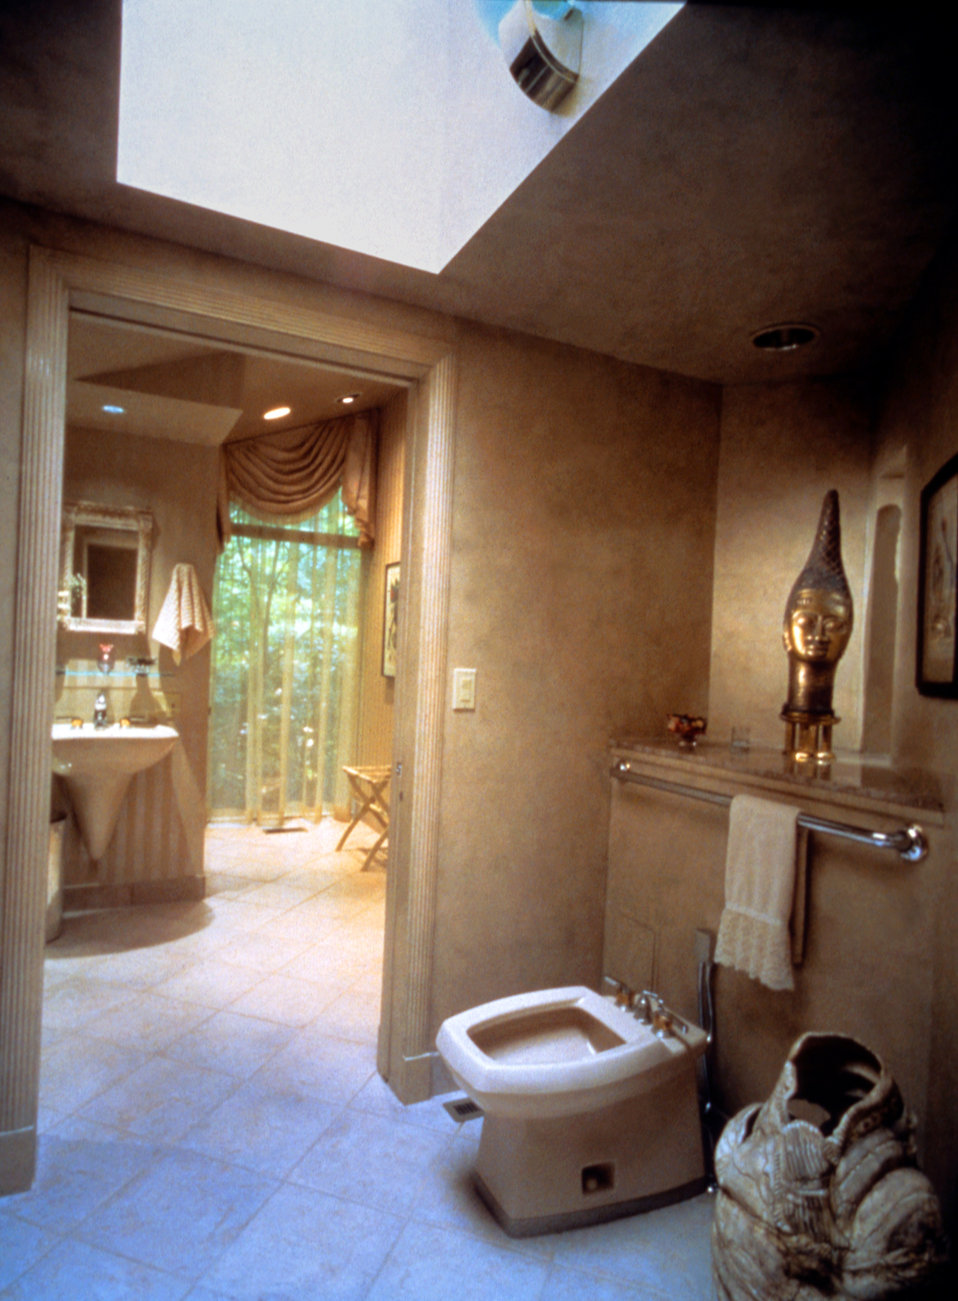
This was one of three images (PHIL# 9198 - 9200), depicting a modern high-end bathroom design, which took into account the needs of the mobility-impaired, thereby, making an overall more accommodating facility for all who might make use of this bathroom. Included was plenty of maneuvering room around the toilet and bidet, while the wall hung sink provided ample knee space for those who might be seated in a wheelchair. This design also showed that the inclusion of such accommodating features need not detract from the design's aesthetic appeal.